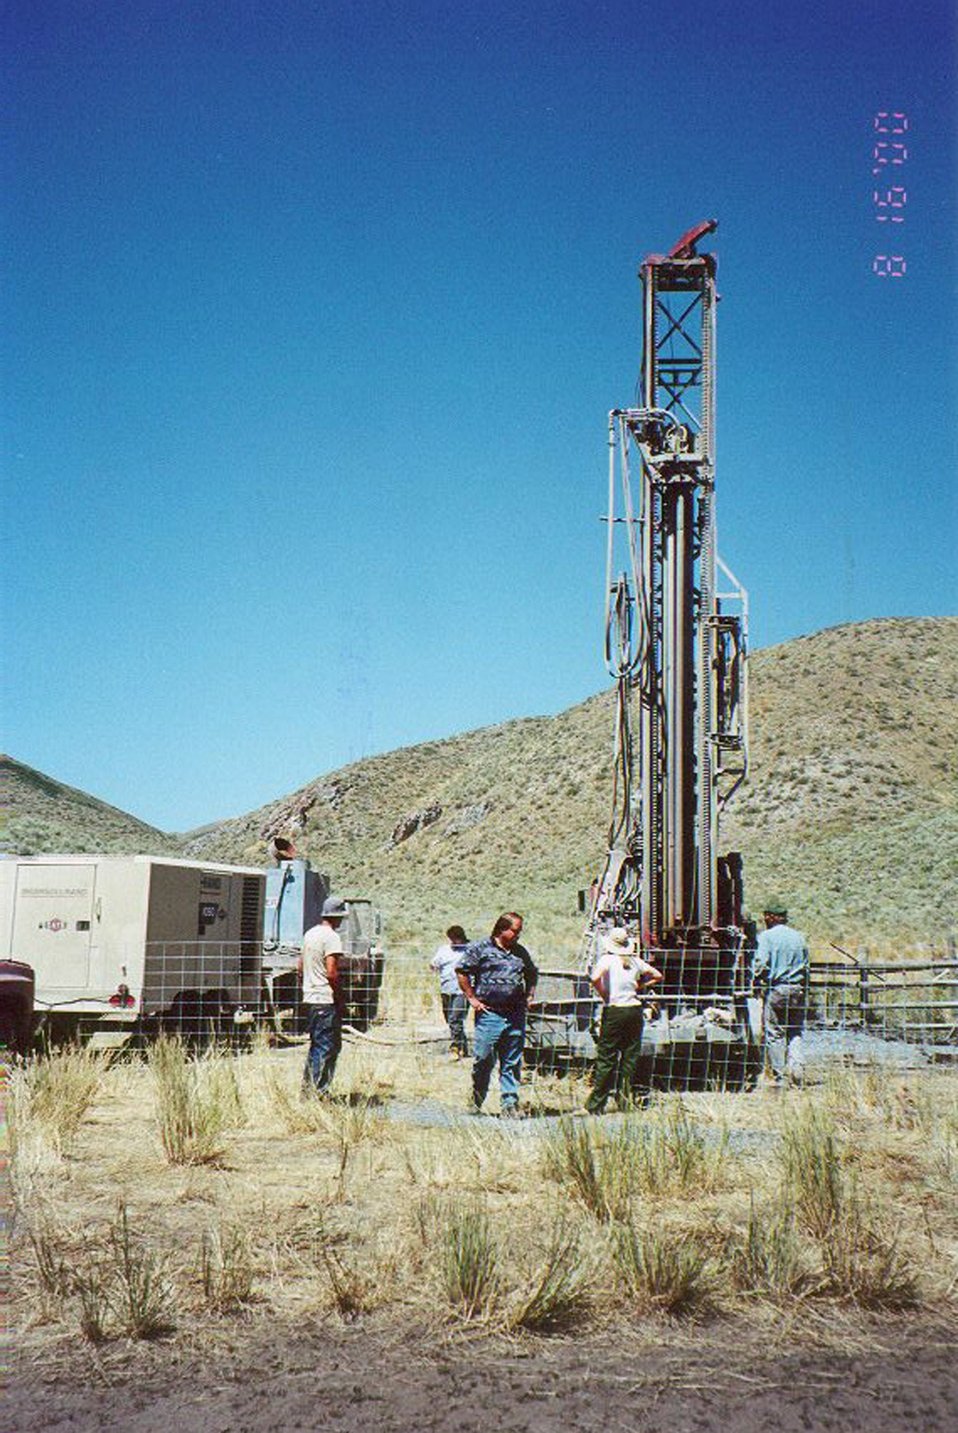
Meadow Creek stock water well Burley Field Office USRD Upper Snake River District